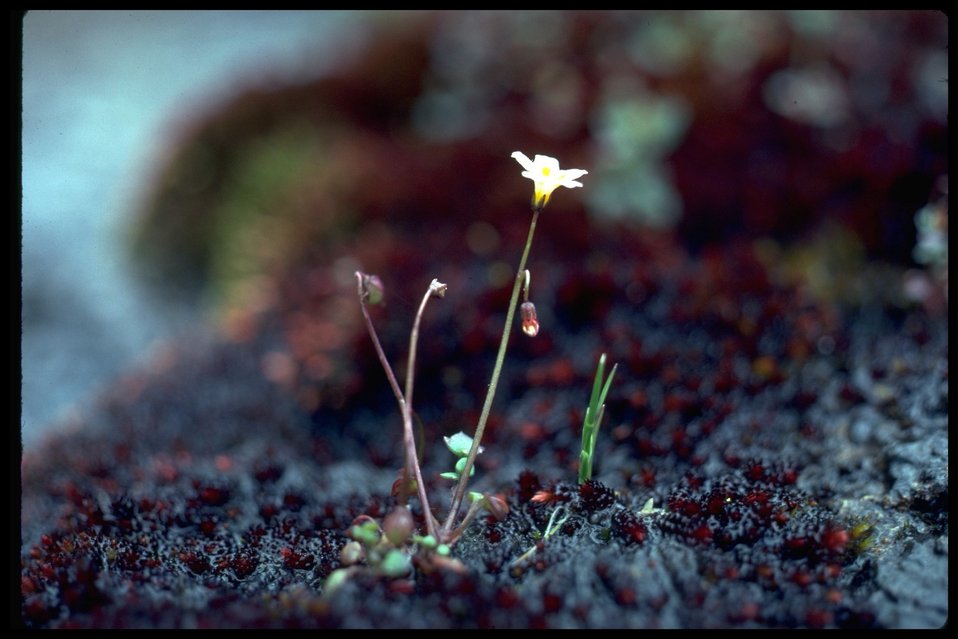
Medium shot of Thompson's mistmaiden (Romanziffia thompsonii).